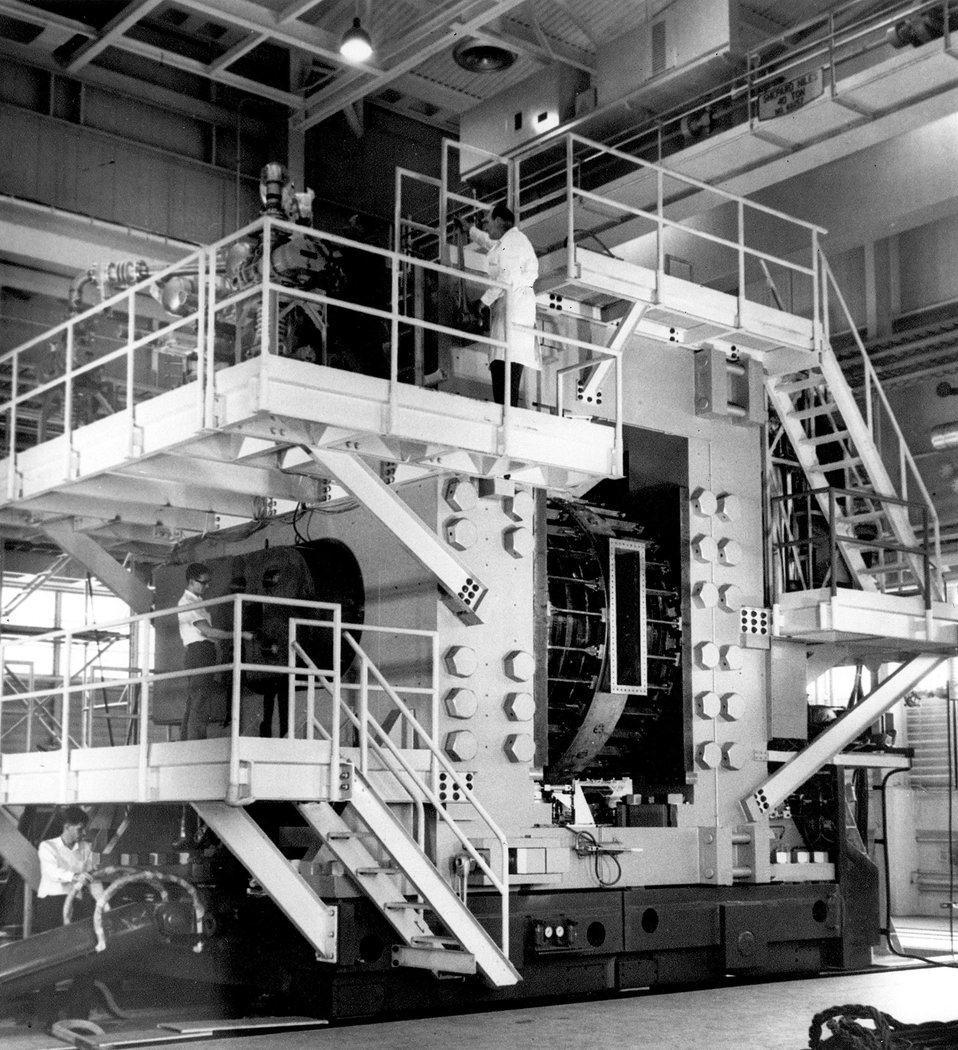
The 80-inch Bubble Chamber assembly, which is housed in a building contagious to the north side of the Alternating Gradient Synchrotron magnet ring. At the lower left side of the chamber is the hydraulic ram that serves to move the assembly along its track. Above the ram, on the first platform, is the aperture at which the light source and the photographic equipment is installed. On the second platform is the high vacuum pumping system, The vacuum chamber and coil can be seen in the large rectangular opening on the facing side of the magnet structure. At the far right of the assembly is the cryogenic equipment, and below it the console for the hydrolic system. c. 1963